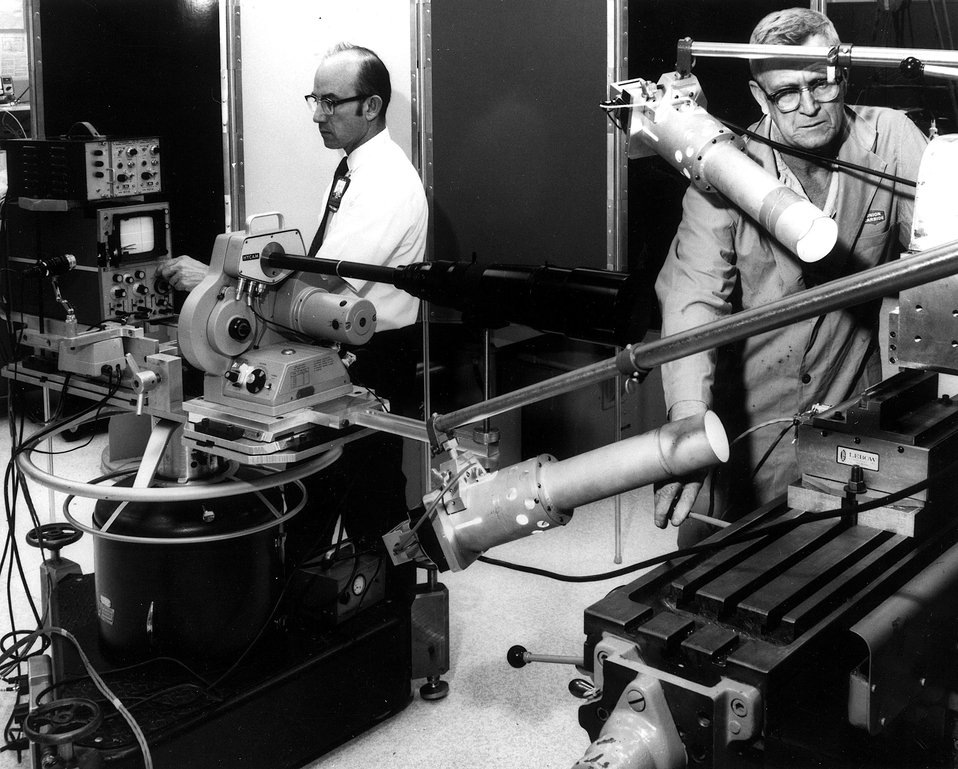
Development engineers at the Oak Ridge Y-12 Plant in Tennessee are using high-speed motion picture photography to study metal-cutting problems that cannot be seen with the human eye. Circa 1972.